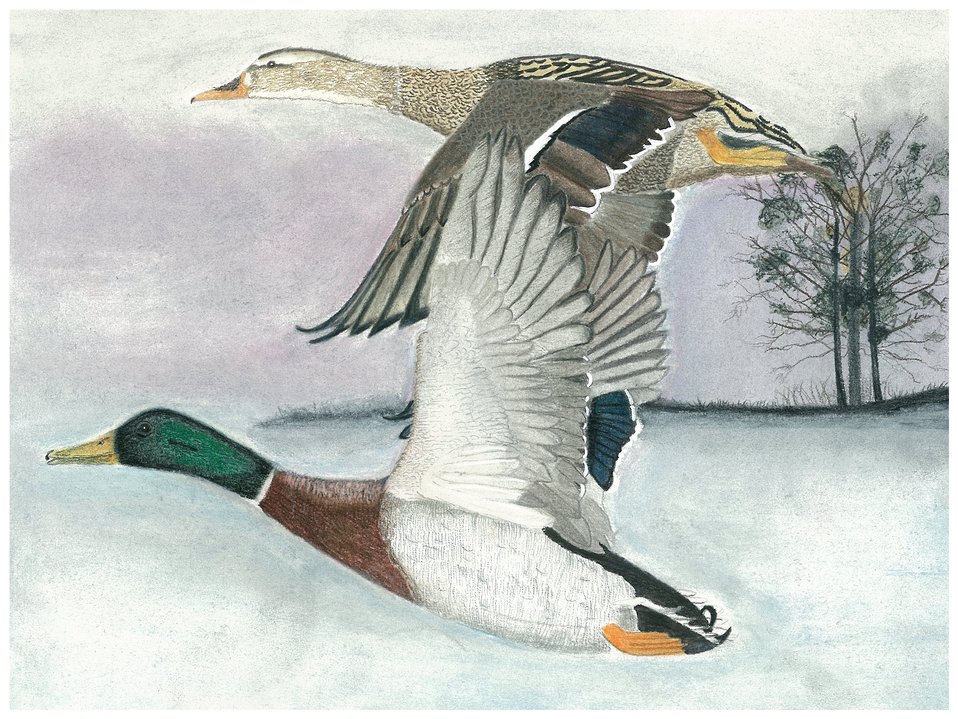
Alabama

2012 Jr Duck Stamp Program
State Best of Show
Alabama